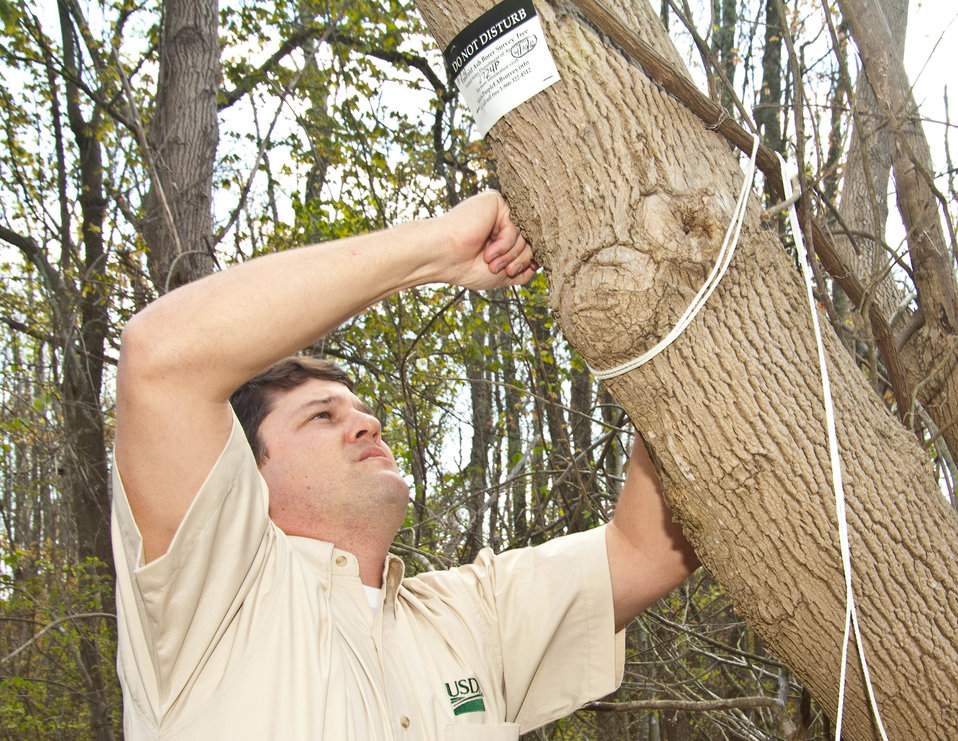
Agriculture Plant Health Safeguarding Specialist Joseph Vulovich ties a survey trap along with sign asking people not to disturb the trap. These large, purple traps are used to identify and track emerald ash borer (EAB) and assist officials in developing strategies to help prevent the spread of this invasive, ash-killing beetle. Patuxent Wetlands Park in Anne Arundel County, MD, on Tuesday, April 10, 2012.